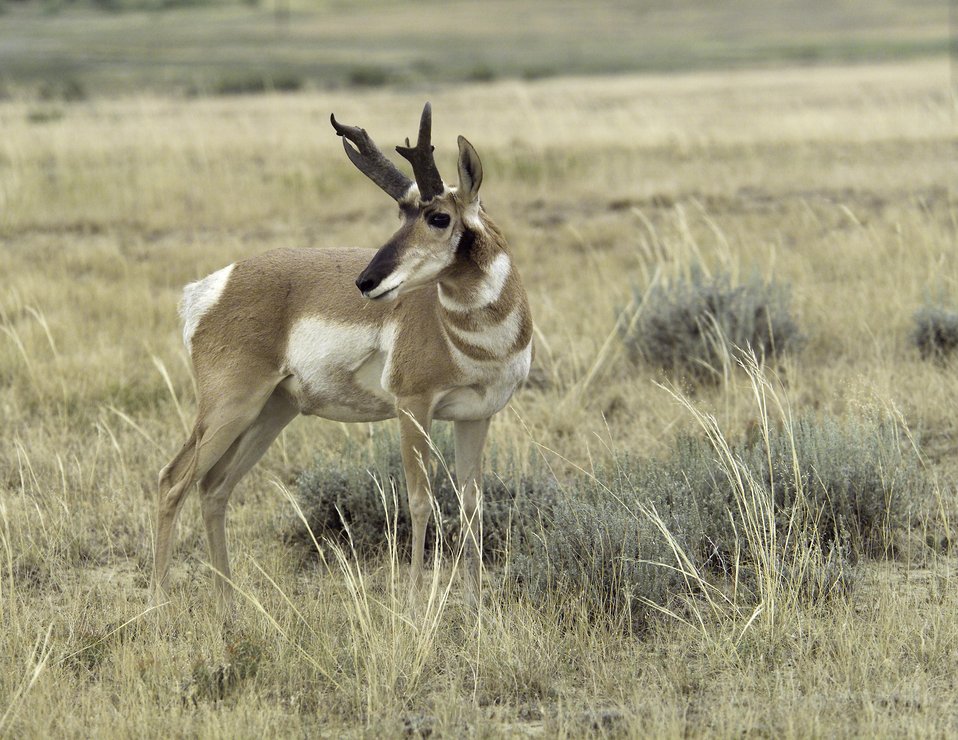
Many antelope as well as other wildlife are at home at Naval Petroleum Reserve No.3 (NPR-3) near Casper, Wyoming.

The Rocky Mountain Oilfield Testing Center (RMOTC) is a Department of Energy field test site for emerging and developing technologies to address critical energy issues. The field test site, located on Naval Petroleum Reserve No.3 (NPR-3), is a 10,000-acre site. There are approximately 700 well bores with 600 producing wells ranging in depth from 500 to 5,000 feet.